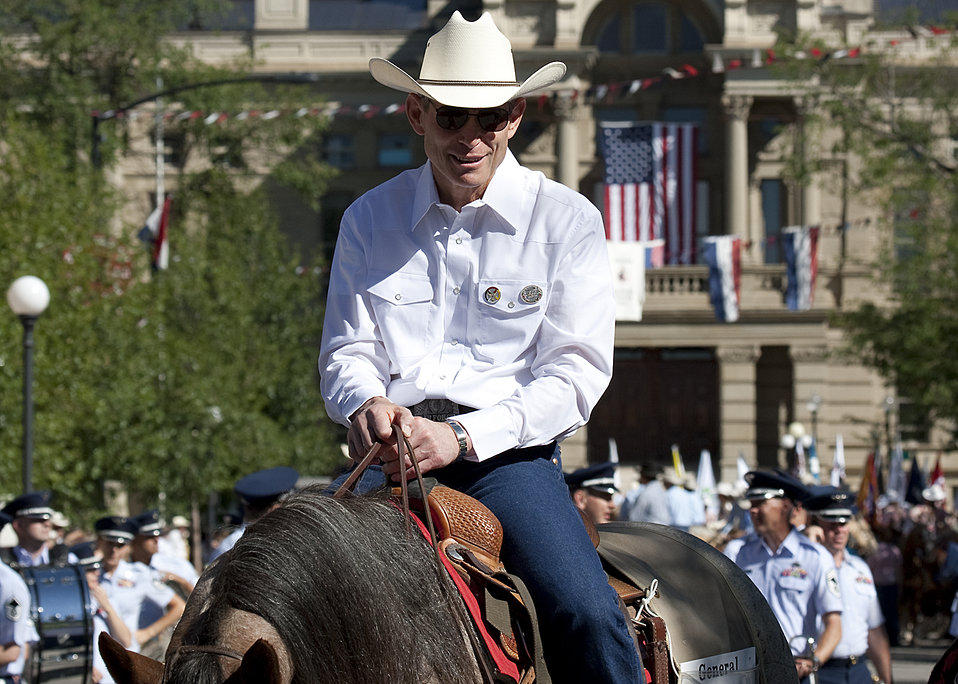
Air Force chief of staff visits Cheyenne

Air Force Chief of Staff Gen. Norton Schwartz rides in the 115th Cheyenne Frontier Days parade as the Grand Marshal July 23, 2011.